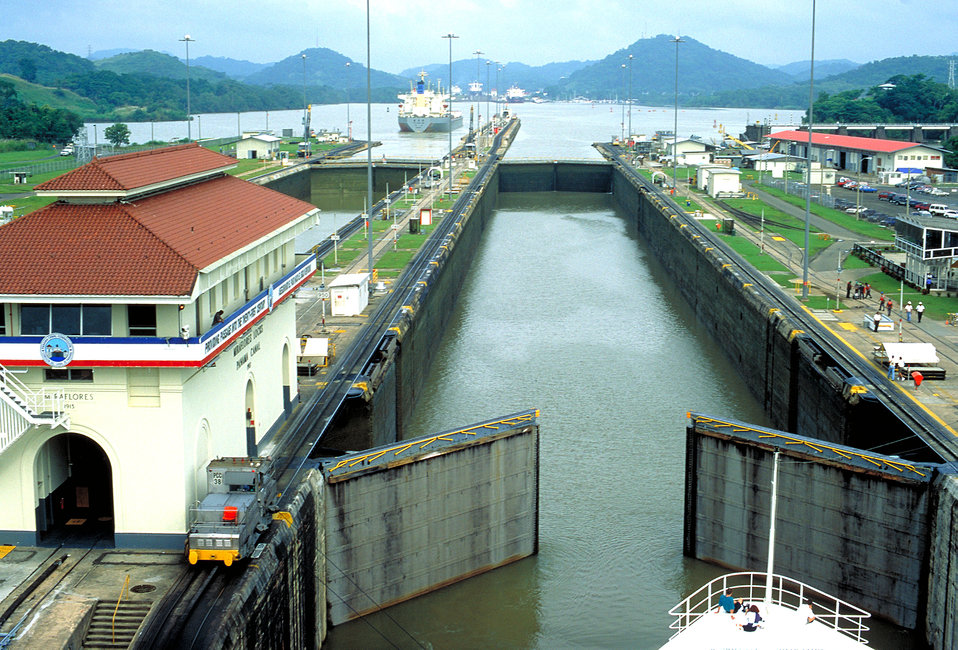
Two aspects of public health concern are in evidence in this photo of the locks at the Pacific Ocean end of the Panama Canal: the current and the historical. Vessels carry goods back and forth through the canal from all parts of the globe. Nearly 14,000 ships a year travel through the canal. The tonnage of the goods they carry is almost 195 million.Historically, the narrow 40 mile isthmus attracted the interest of developers in the latter half of the nineteenth century. Although a formidable engineering challenge, the terrain was less daunting than the disease-carrying mosquitoes of the region. Under the leadership of Colonel William C. Gorgas, U.S. Army, M.D., public health officials instituted sanitation measures that eliminated the yellow fever- and malaria-carrying mosquitoes, which made building the canal possible. Currently the Canal Zone is a tourist destination. It is important for all travelers to be aware of the potential health hazards of both foreign and domestic travel.